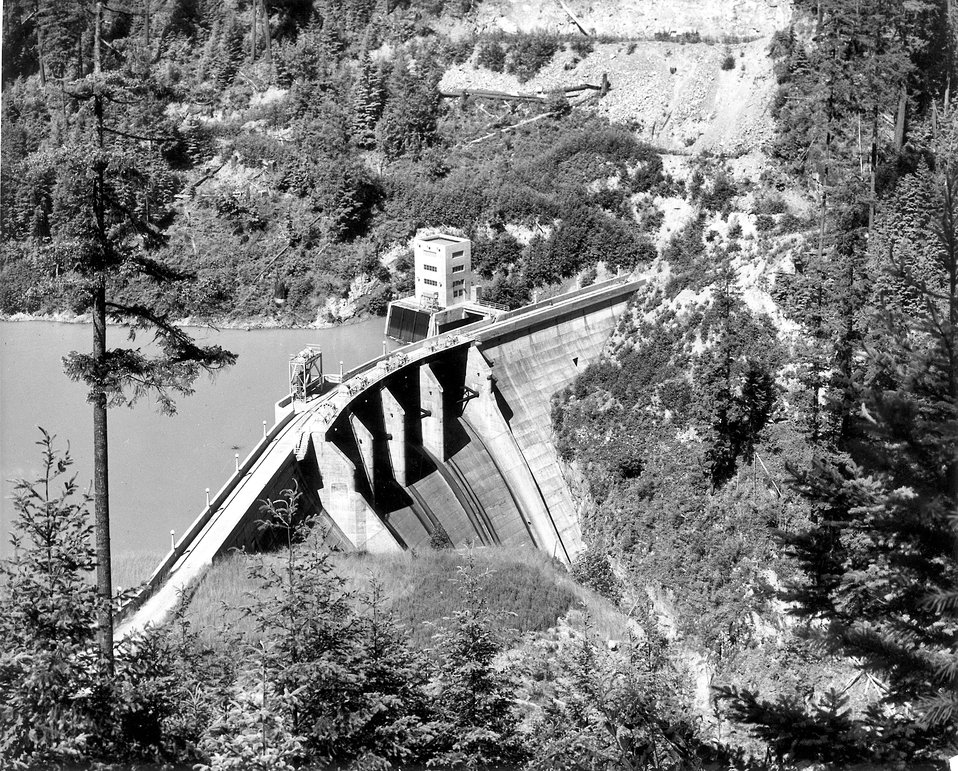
La Grande, Takoma, Washington. c. undated